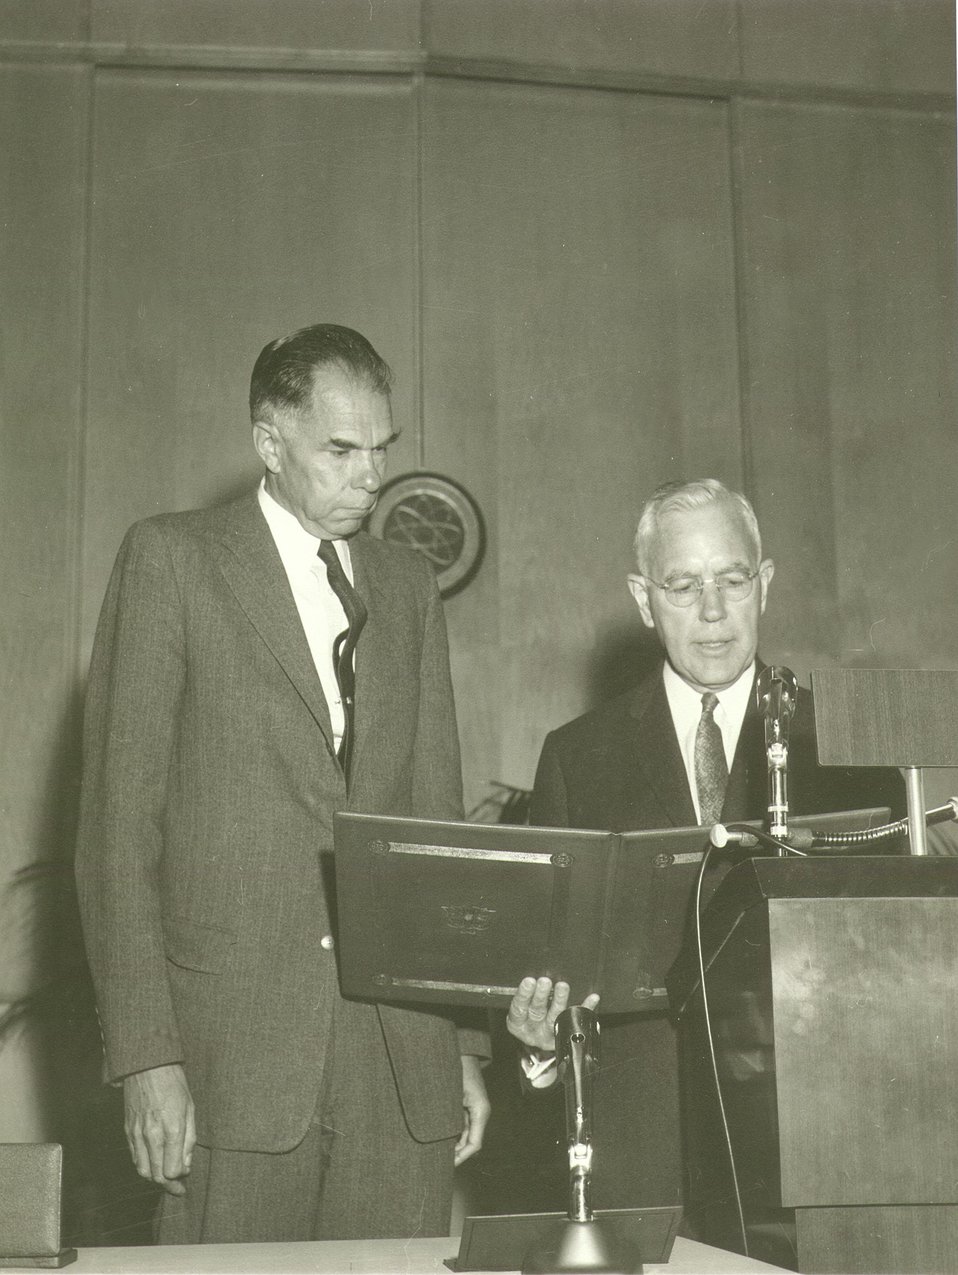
Fermi Award Ceremony for Dr. Seaborg in Washington on Dec. 2, 1959. L to R: Glenn Seaborg and AEC Chairman John McCone.